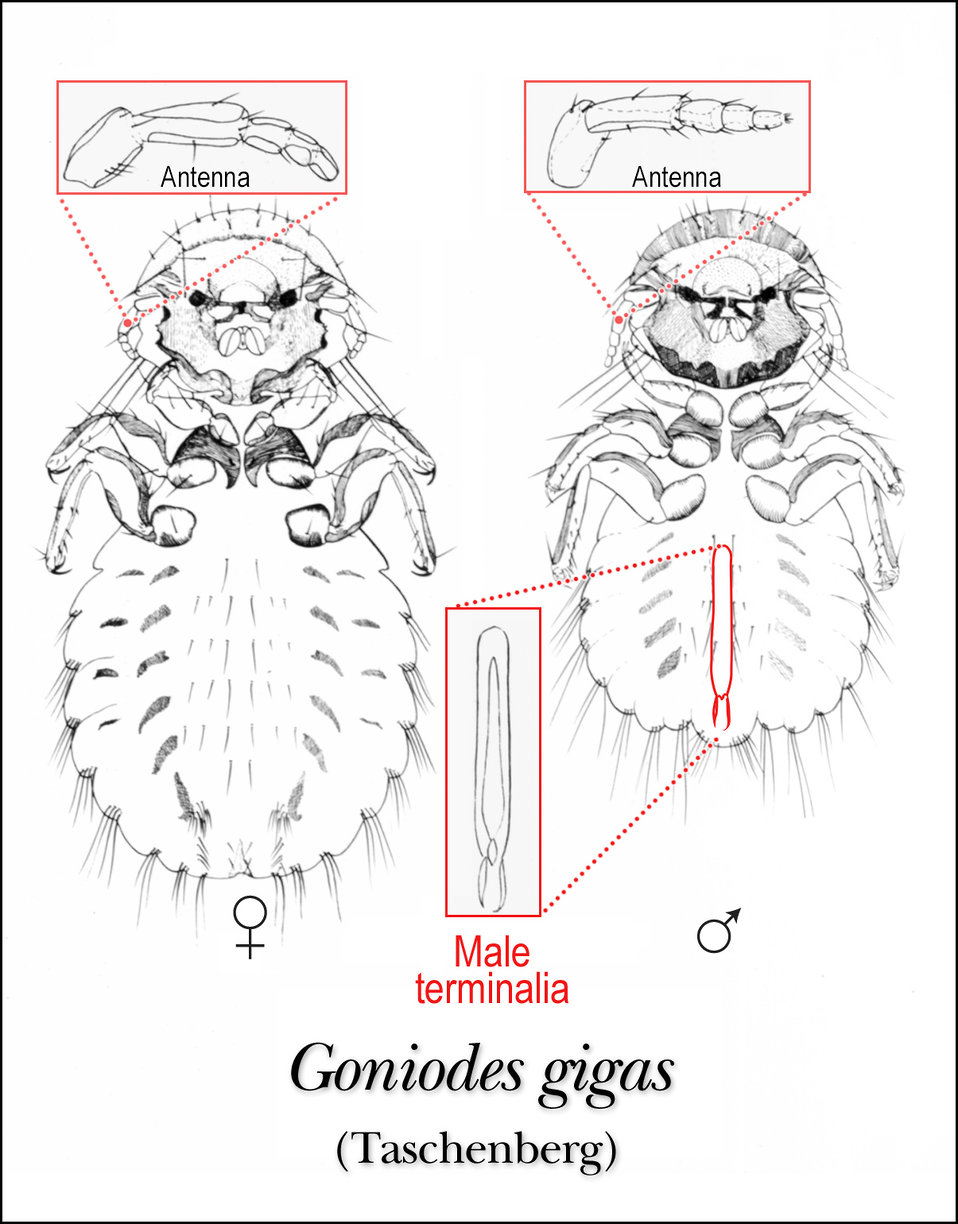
This illustration depicts the morphologic characteristics of the ventral surface of the female and male louse, Goniodes gigas.